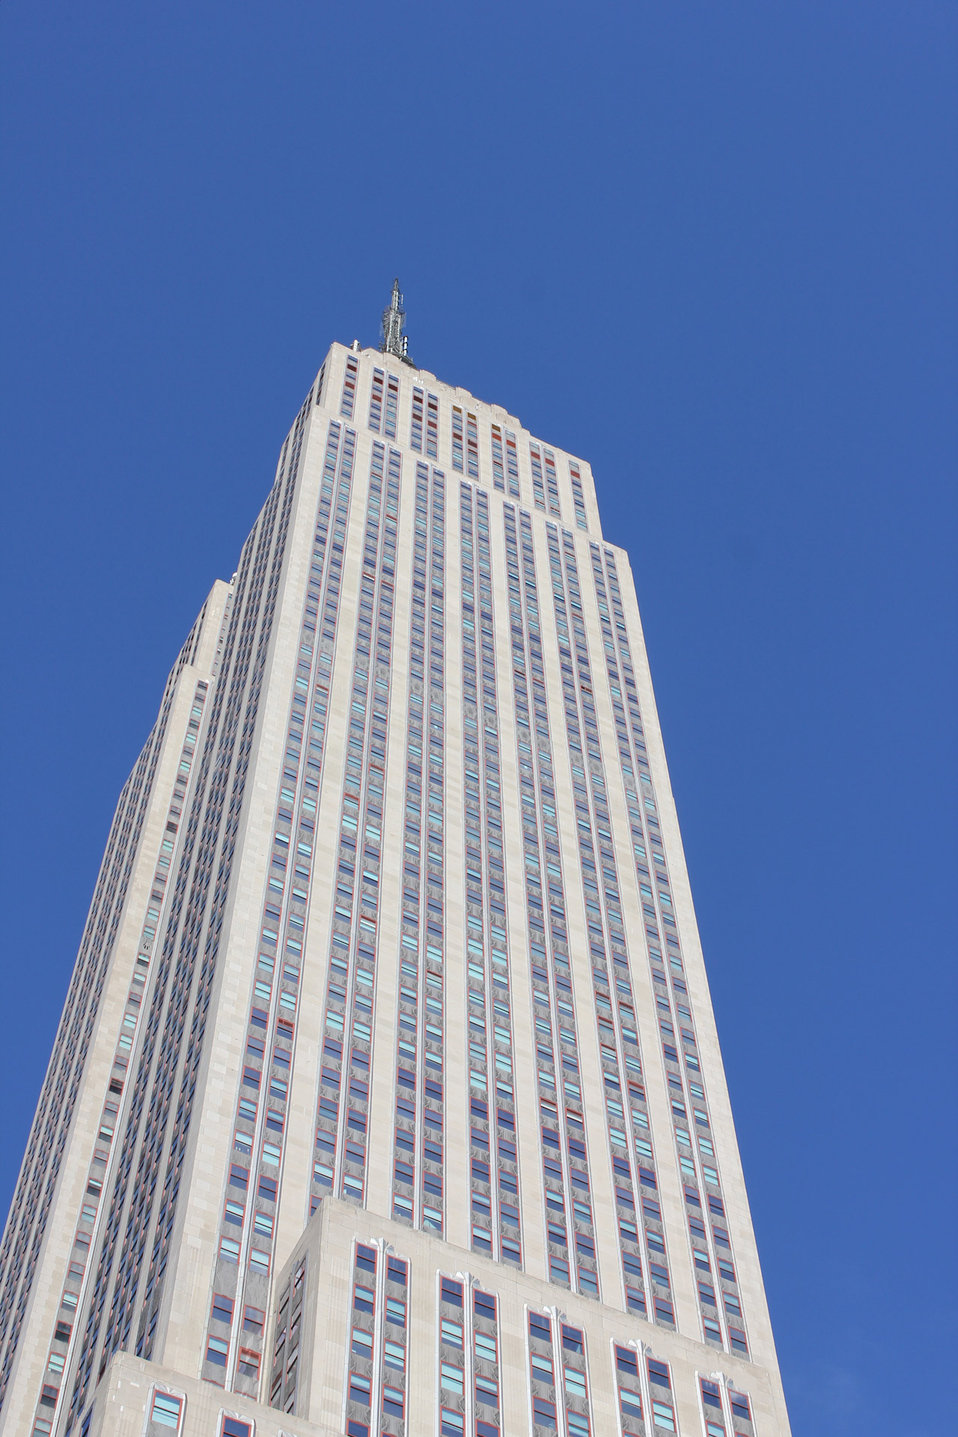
Empire state building

New york building.